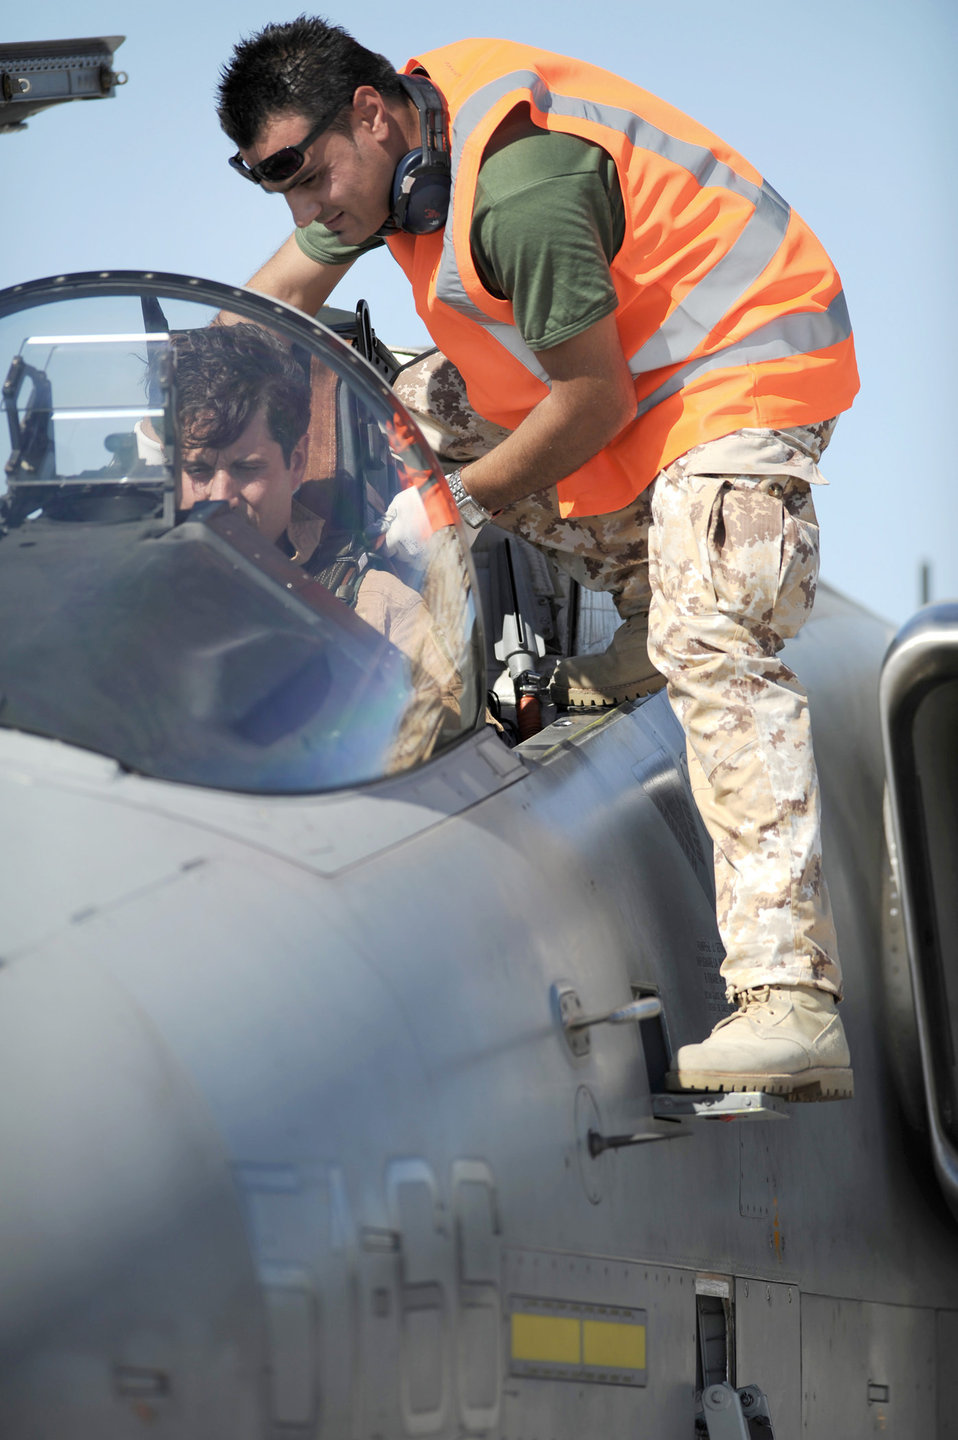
Green Flag provides Italian air force new insight on close air support

Chief Master Sgt. Francesco Alberico, helps strap Capt. Francesco Mariotti into an AMX/A-1 before a training mission at Red Flag 09-5 Aug. 24 at Nellis Air Force Base, Nev. Before participating in Red Flag, the Italian Air Force participated in their first-ever Green Flag here Aug. 9 through 20. Green Flag is a realistic close-air-support training exercise for Airmen and Soldiers preparing to deploy in support of combat operations in Southwest Asia. Chief Alberico is an Italian air force crew chief.